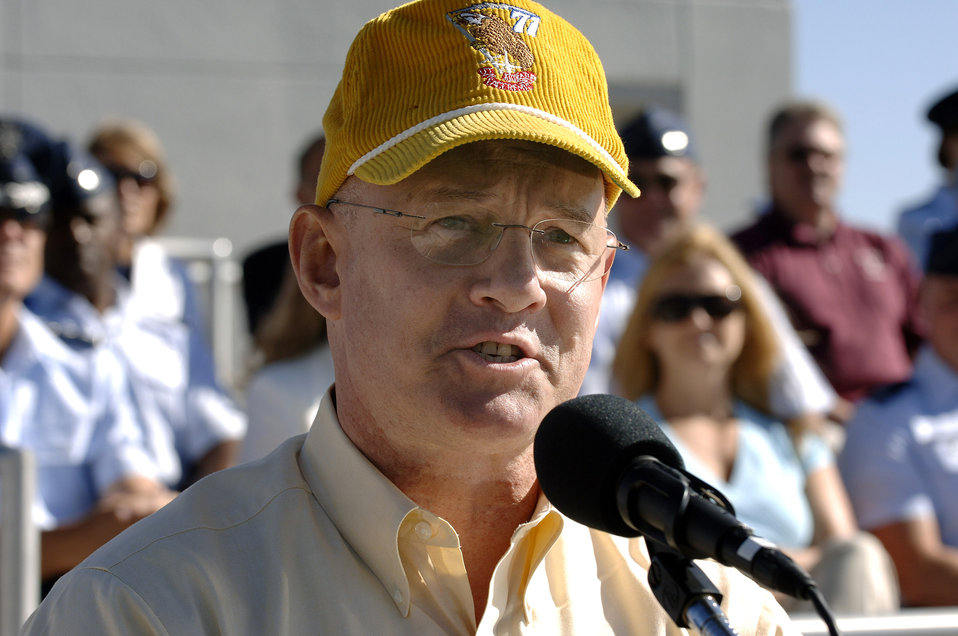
Acceptance Parade for Class of 2011

Retired Lt. Gen. Richard V. Reynolds speaks on behalf of the Class of 1971 during the Class of 2011 Acceptance Parade Aug. 8 at the U.S. Air Force Academy in Colorado Springs, Colo. The Acceptance Parade marks the formal acceptance of the new cadets into the cadet wing. Twenty-one graduates of the Class of 1971 were in attendance and will provide mentorship and participate in 2011 Class activities and functions during the cadets' four years at the Academy.